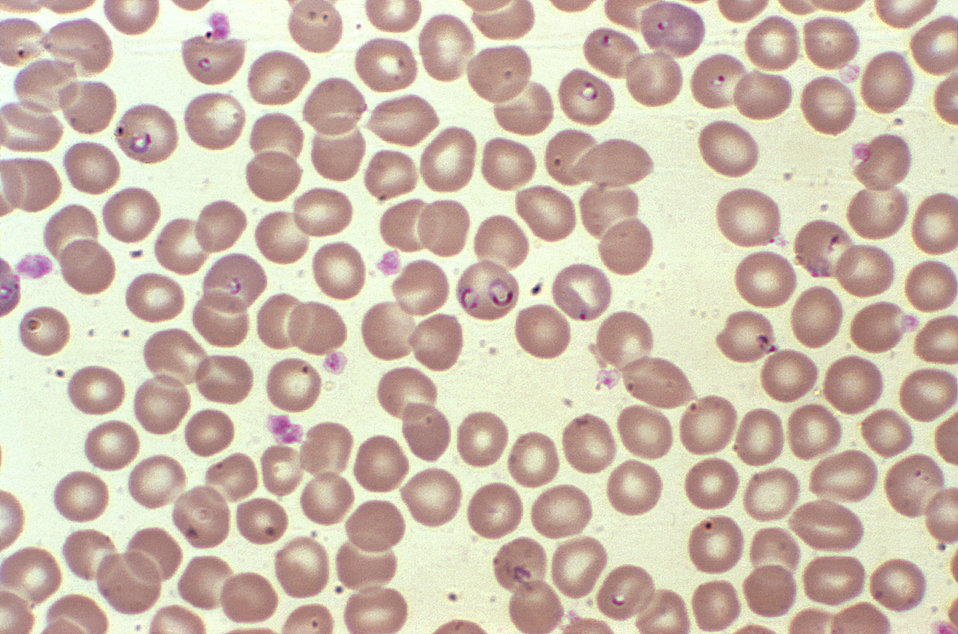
Magnified 1000X, this photomicrograph revealed the presence of what were determined to be numbers of intraerythrocytic Babesia sp. ring-form parasites.